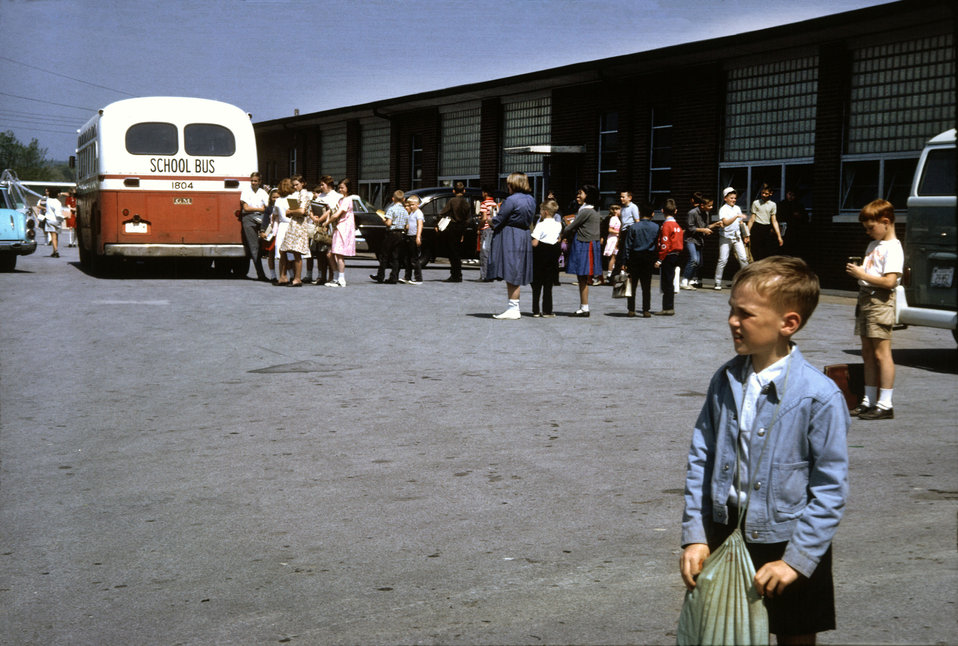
School Bus Stop Oak Ridge

DOE photo by Ed Westcott

School Bus Stop Oak Ridge Tennessee April 1965